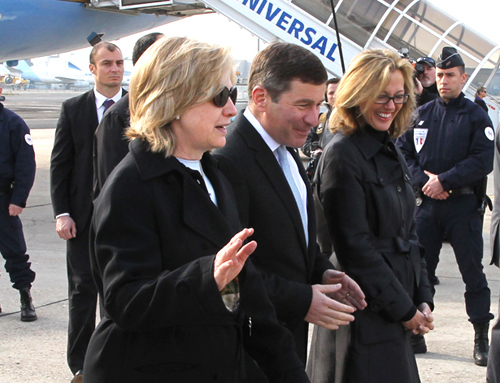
Secretary Clinton Is Greeted By Ambassador Rivkin and His Wife, Mrs. Tolson

U.S. Secretary of State Hillary Rodham Clintonis greeted by U.S. Ambassador to France, Charles H. Rivkin, and his wife, Mrs. Tolson, at Le Bourget Airport in Paris, France, on March 15, 2011.